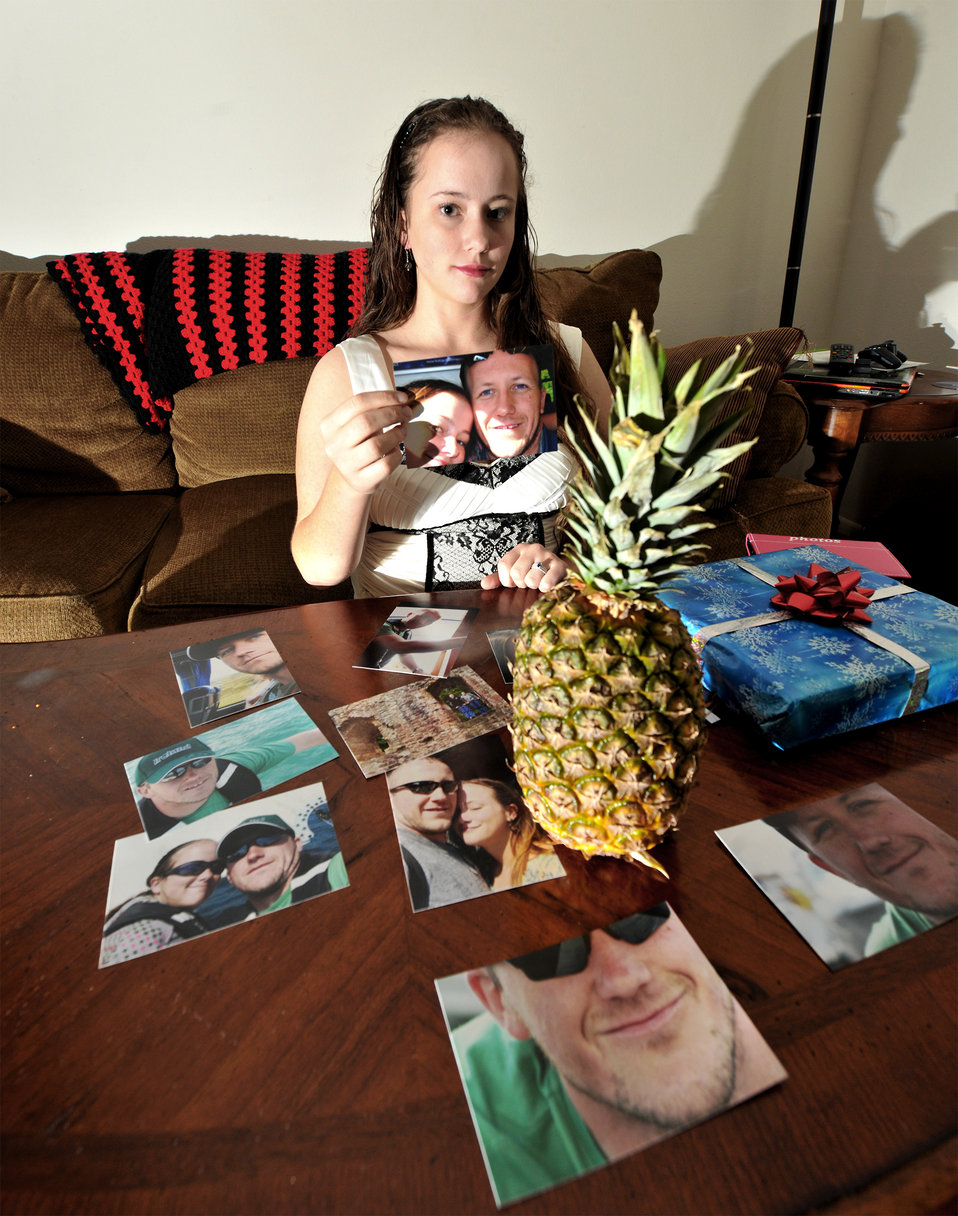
I'm Glad He's Home

A pineapple sits on a table surrounded by pictures and a Christmas present during a portrait of Airman 1st Class Brigitte Brantley-Sisk Jan. 12, 2011. Her husband told her in his deployed location there wasn't any pineapples, so she bought him one for his homecoming and a present because he missed Christmas. Airman Brantley-Sisk is a 23rd Wing Public Affairs journalist.